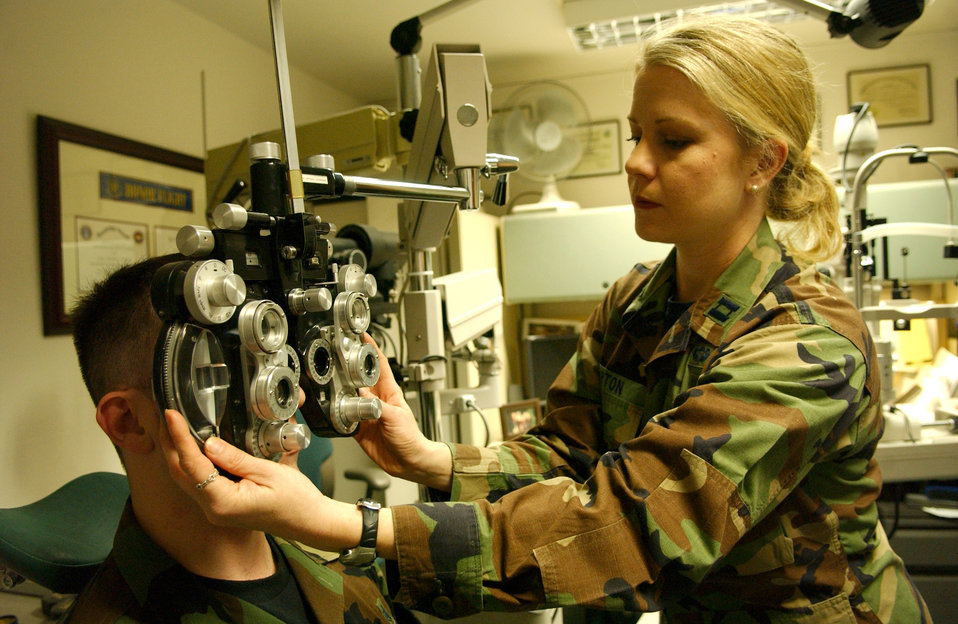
Eye check

Capt. Christie Barton determines a prescription for Staff Sgt. Kevin Keene. Captain Barton is an optometrist with the 435th Aerospace Medicine Squadron at Ramstein Air Base, Germany. Sergeant Keene is with the 435th Dental Squadron.